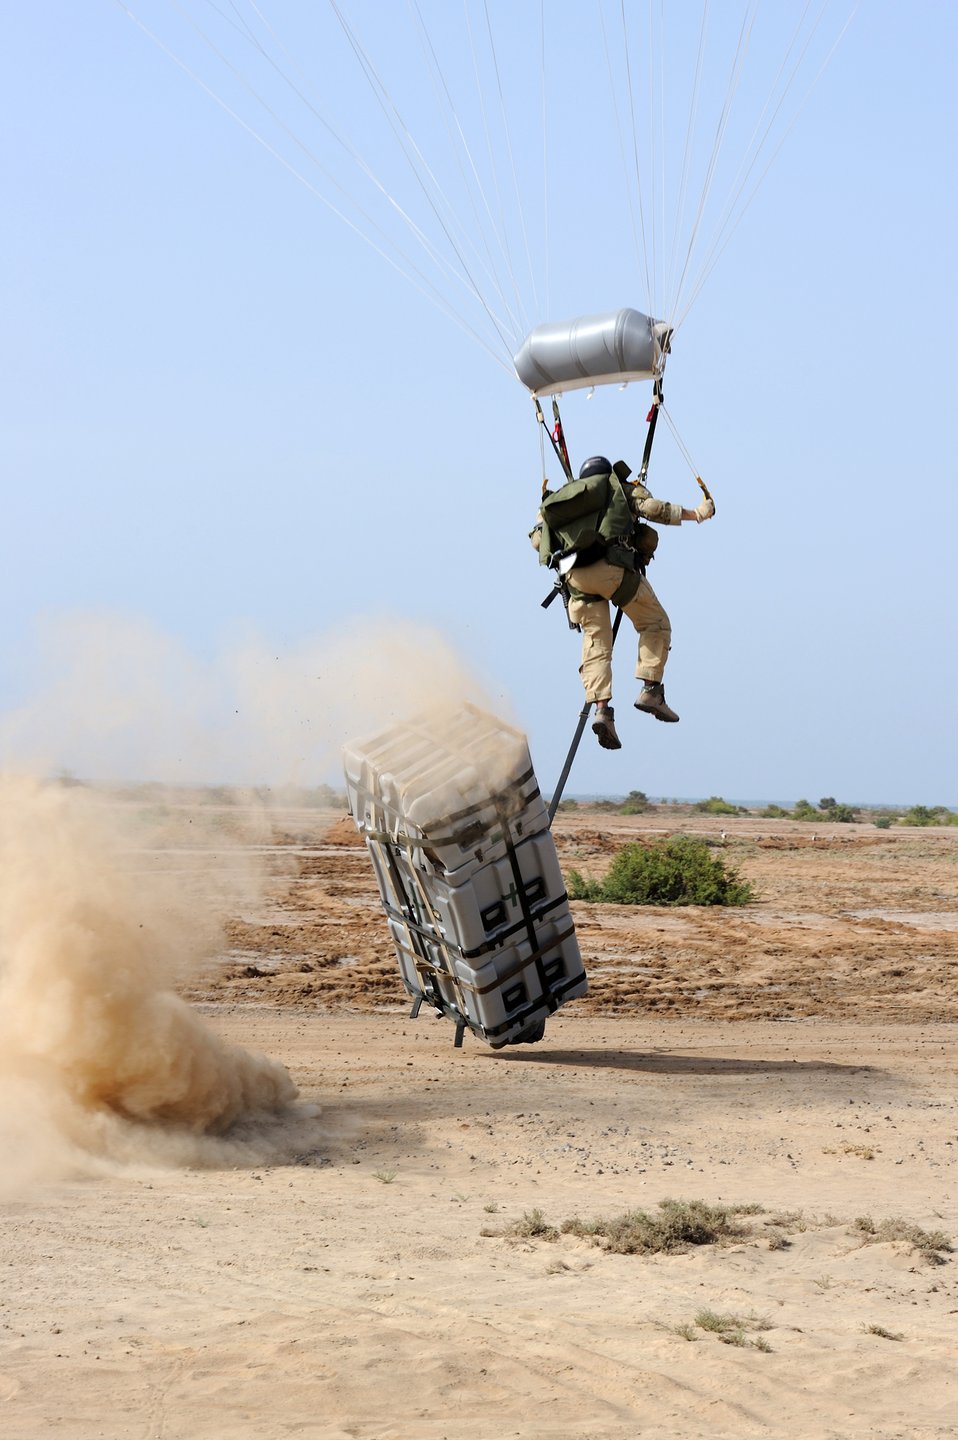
Airmen participate in African rescue exercise

A pararescueman drops into the zone trailing his team's rescue supplies at an